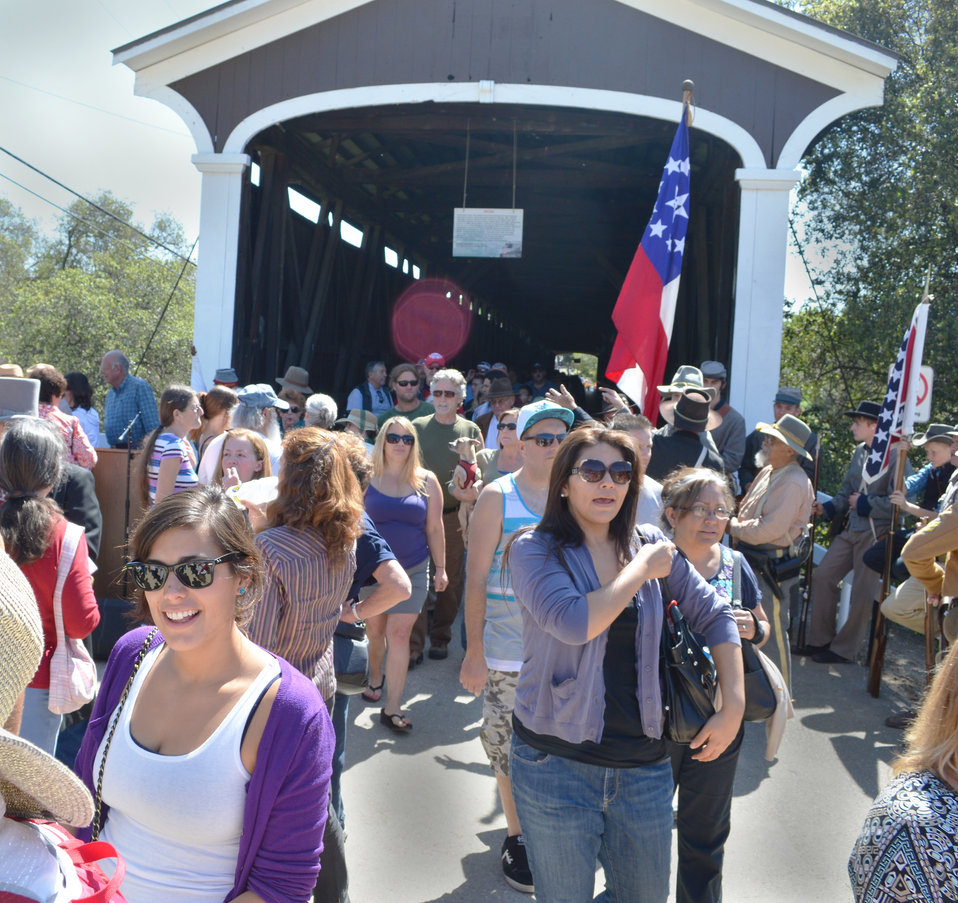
Historic weekend in Knights Ferry

Visitors walk through the historic Knights Ferry covered bridge at the U.S. Army Corps of Engineers Sacramento District’s Stanislaus River Parks in Knights Ferry, Calif., March 22, 2014.